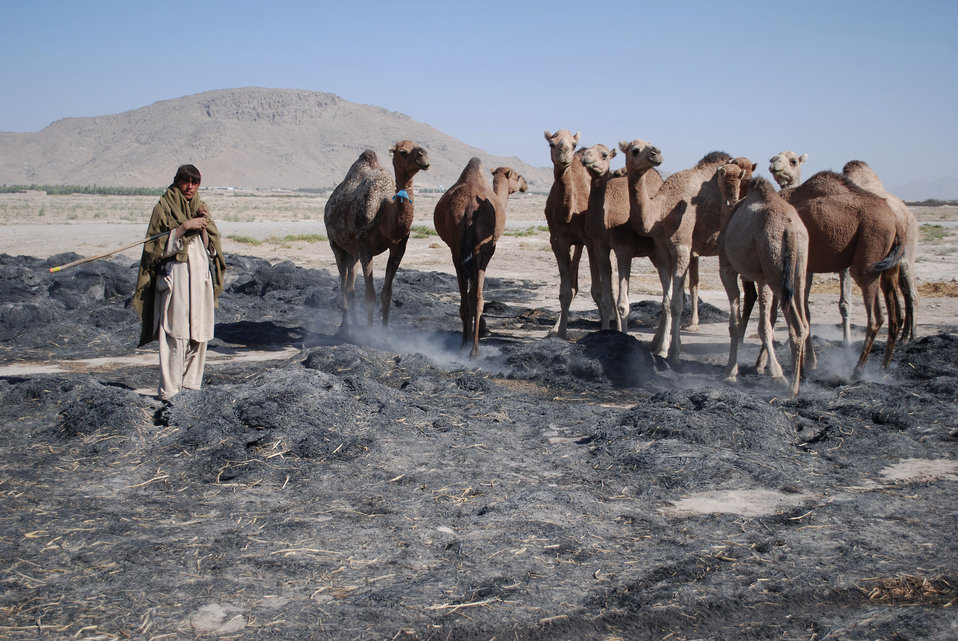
'On the Road' in Kandahar